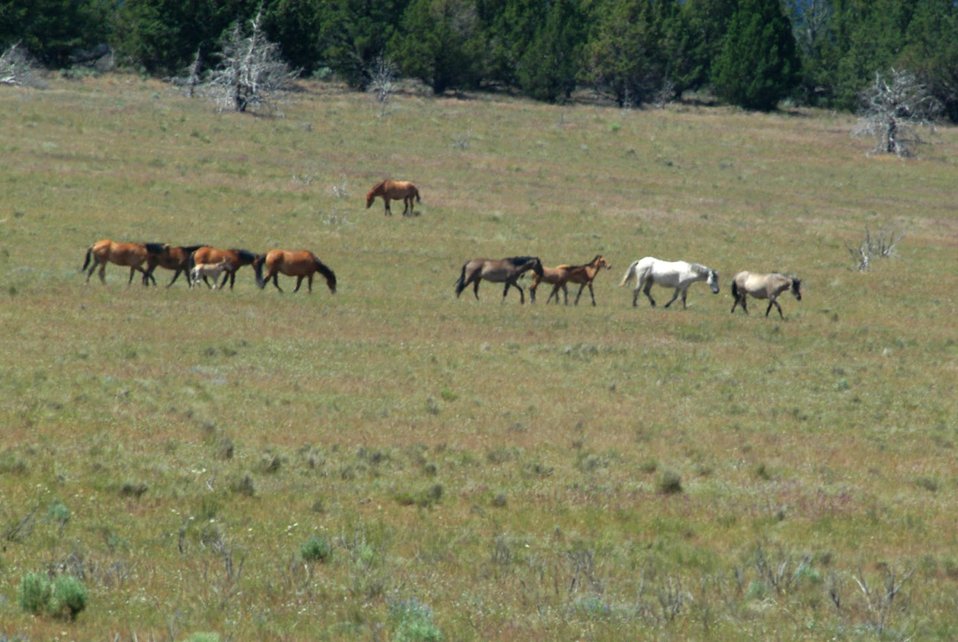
Kiger horses roam the plateaus of the Kiger Wildhorse Herd Management Area near Steens Mountain in Southeastern Oregon.